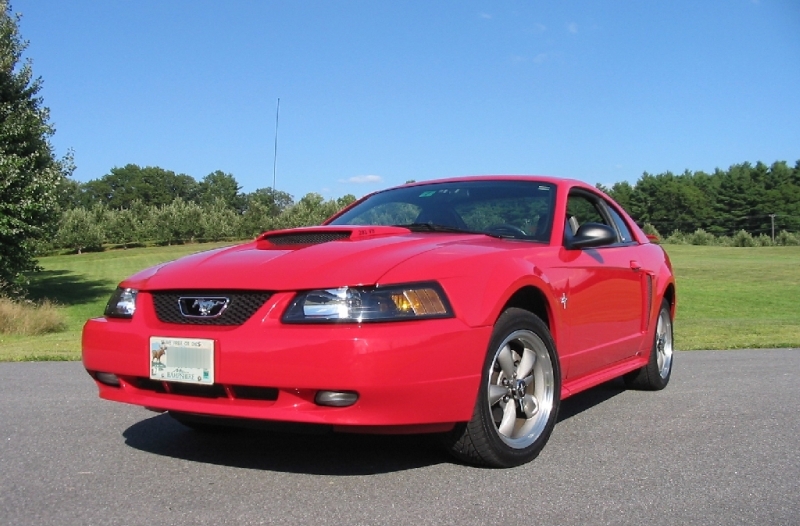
2002 Ford Mustang GT. Author created photo. Released to public domain.